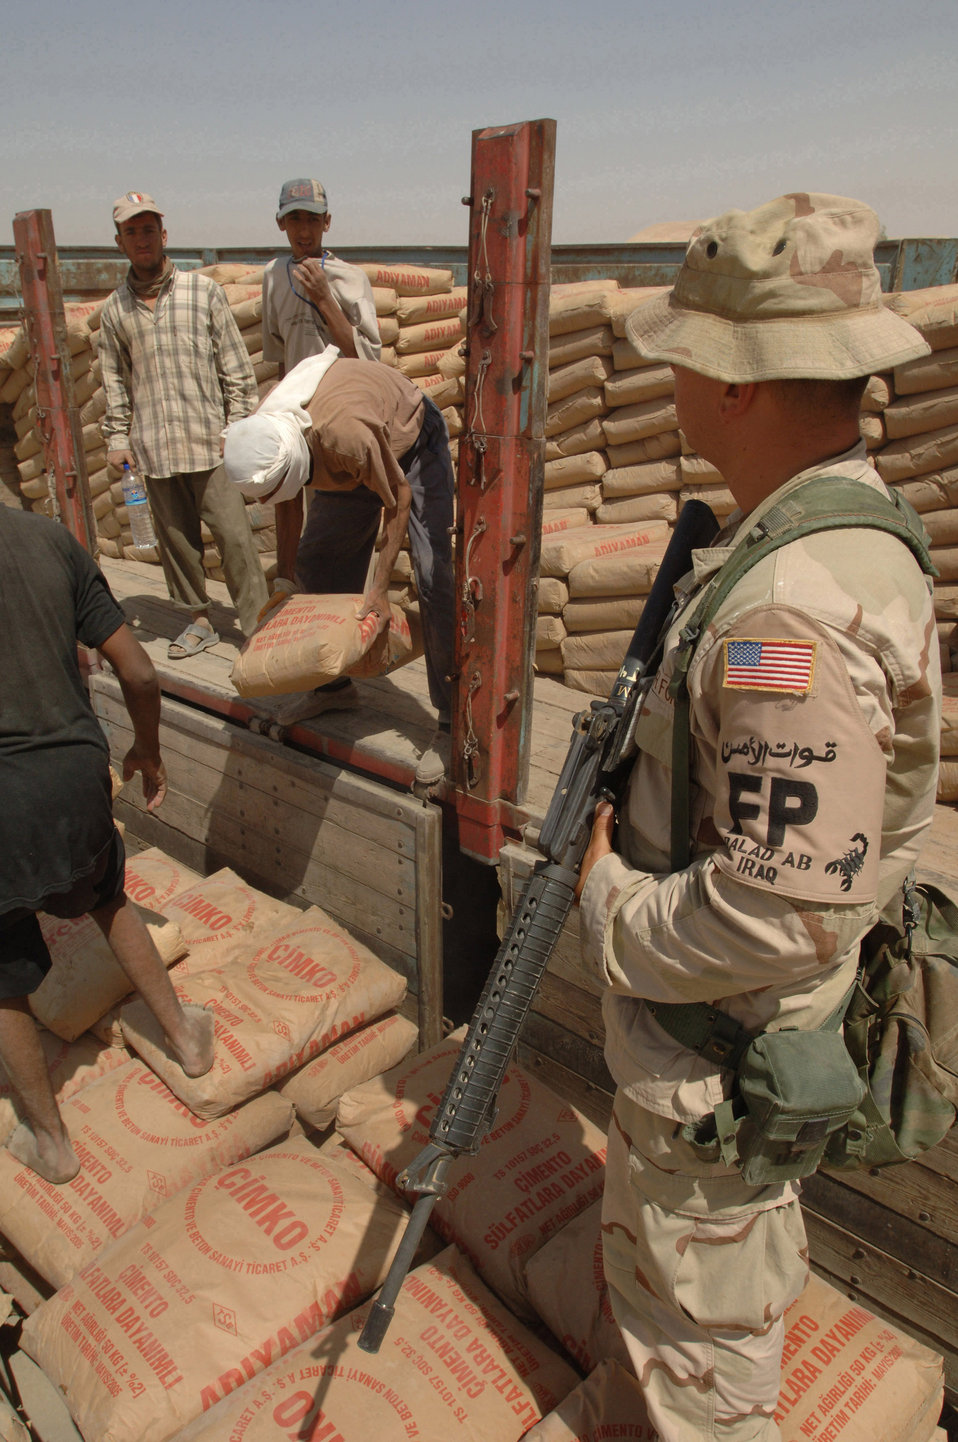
Operation Iraqi Freedom

BALAD AIR BASE, Iraq -- Staff Sgt. Wayne Schenk watches over local Iraqi workers here as they unload bags of concrete from a truck. Third-country nationals and local nationals make up a large percentage of the workforce used for construction projects and day-to-day jobs around the base. An escort's job is to monitor workers and provide security. For many escorts, the job requires long days in the scorching sun with weapon in hand and a careful eye watching for suspicious activities. Sergeant Schenk is assigned to the 332nd Expeditionary Civil Engineer Squadron and is deployed from Wright-Patterson Air Force Base, Ohio.